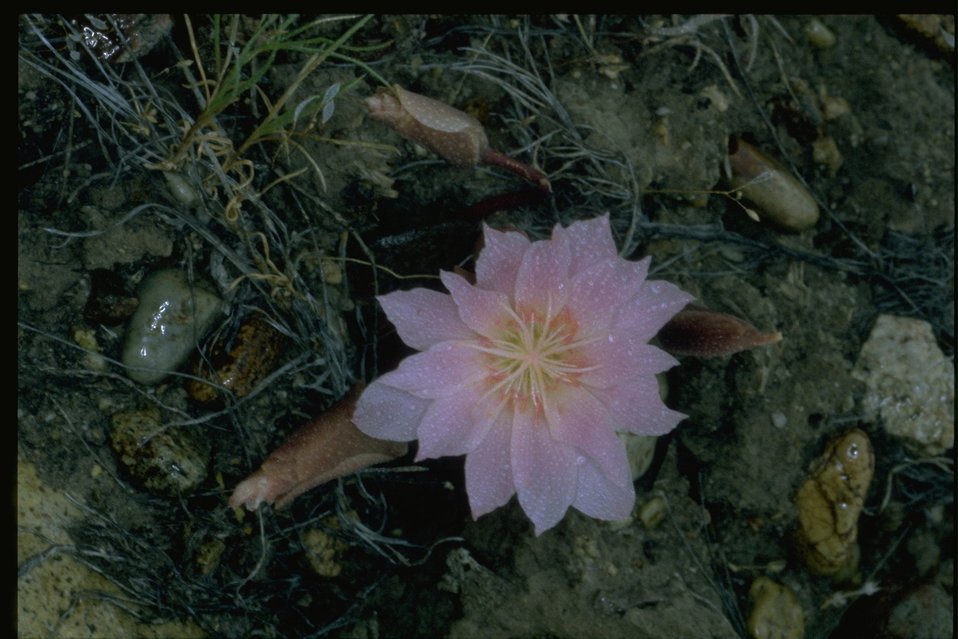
Medium shot of Bitterroot wildflower.